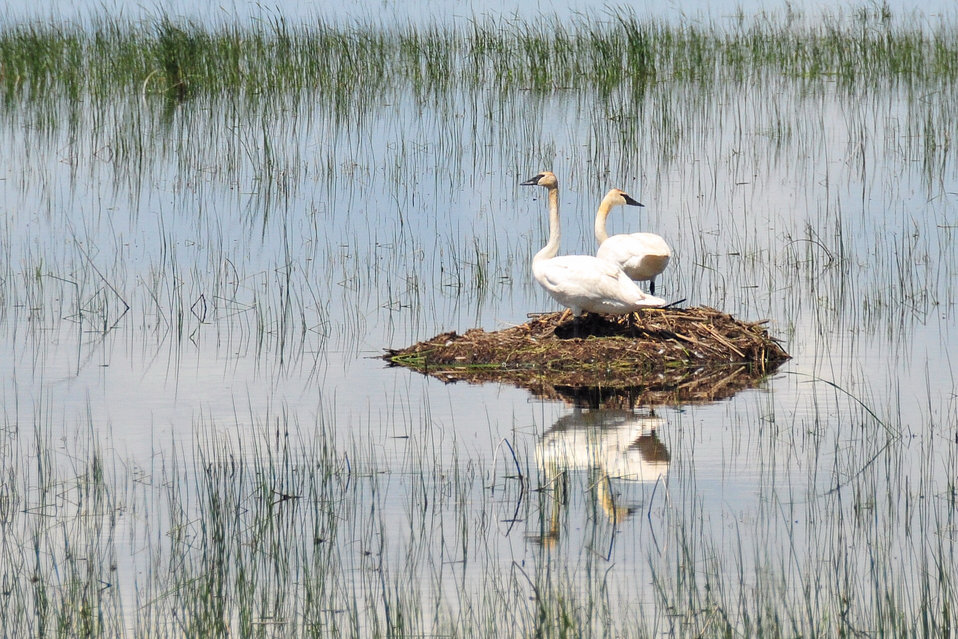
Trumpeter Swan Pair Lacreek NWR